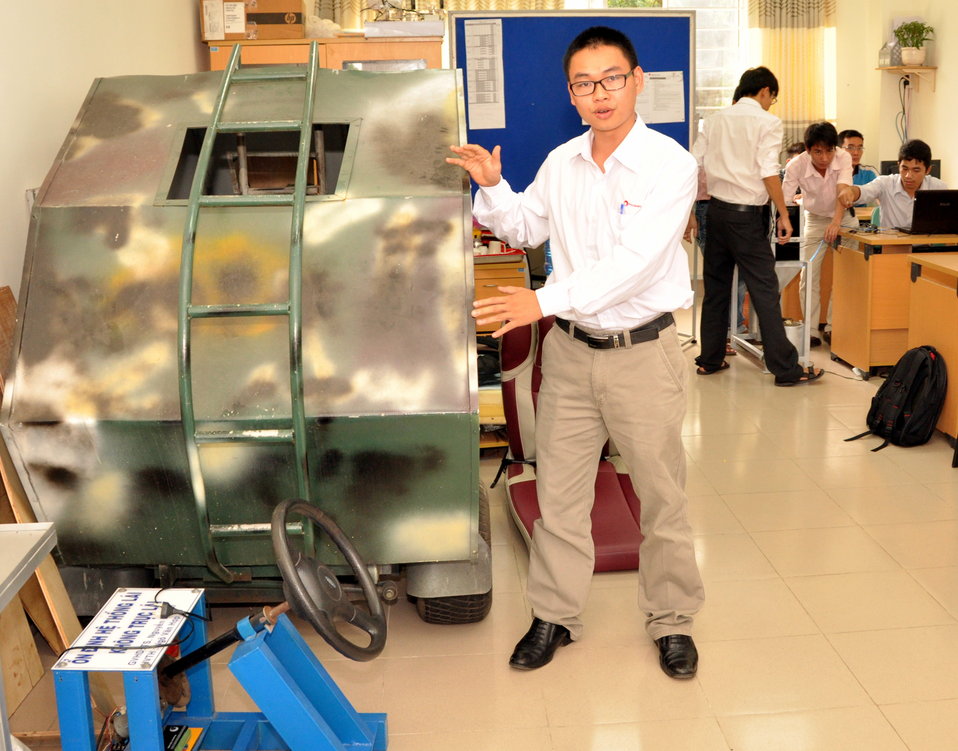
Ho Chi Minh City University of Technical Education, HEEAP Partner

Faculty Member Nguyen Ba Hai
January 11, 2013